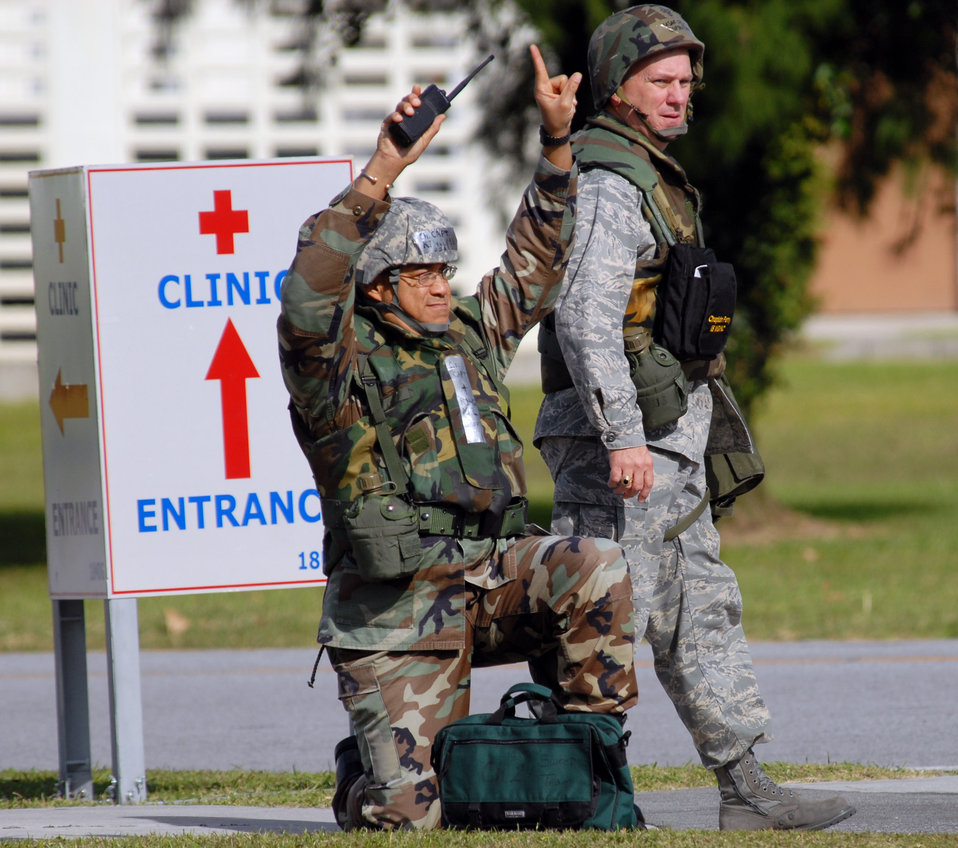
Airmen, Marines join forces during exercise at Kadena

Chaplain (Capt.) Martin King (left) and Chaplain (Col.) Clifton Perry set up a cordon after discovering a simulated unexploded ordnance outside Chapel 2 Dec. 4 at Kadena Air Base, Japan. The scenario is part of Exercise Beverly High 09-01, a joint Air Force-Marine Corps exercise designed to test the ability of both services to execute their critical missions under simulated combat conditions.